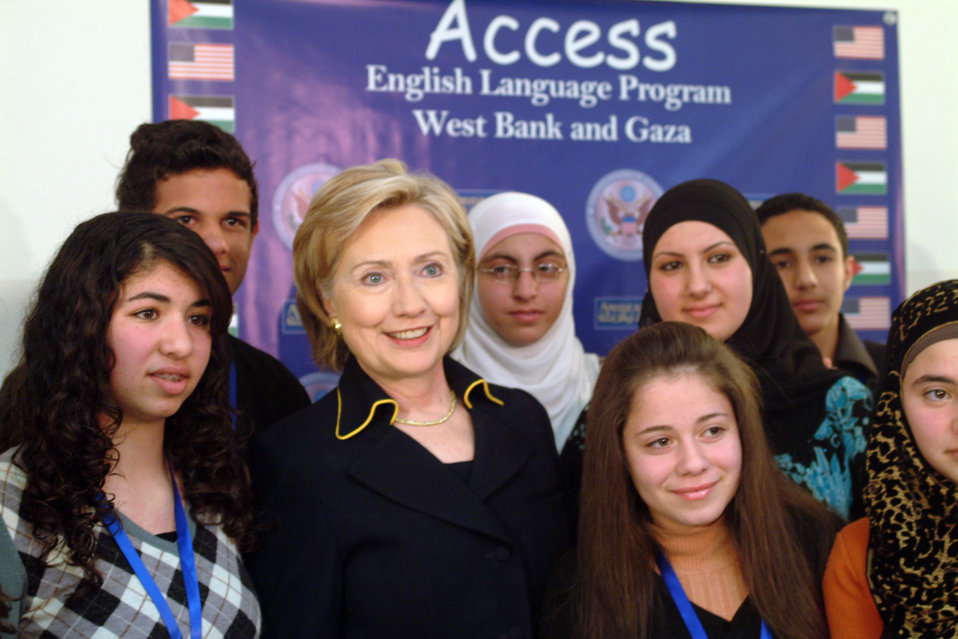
Secretary Clinton at Amideast Event

Secretary Clinton at an Amideast event in Ramallah March 4, 2009.